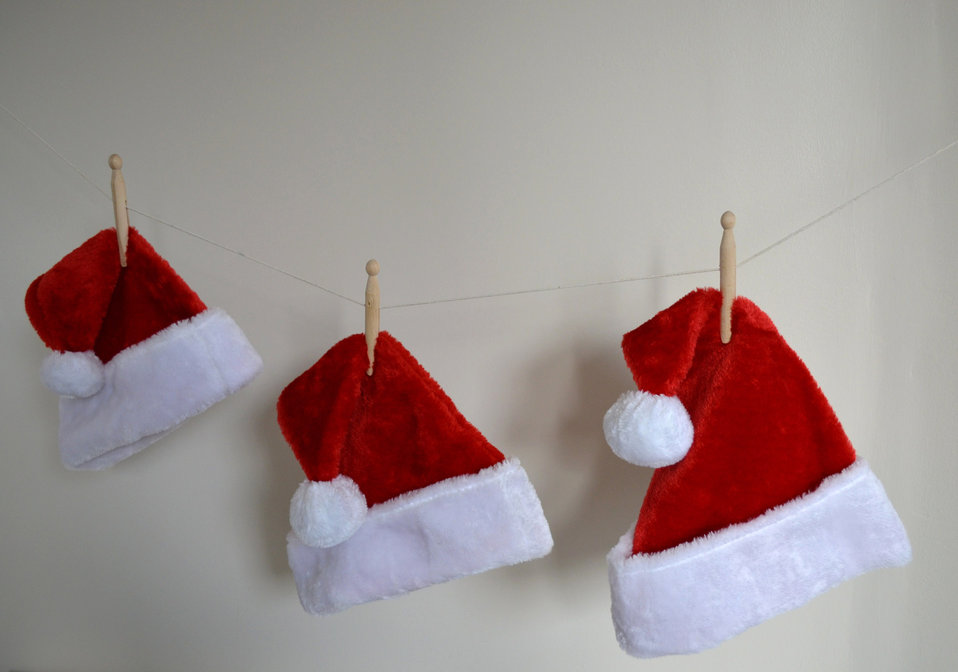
Santa claus hats.